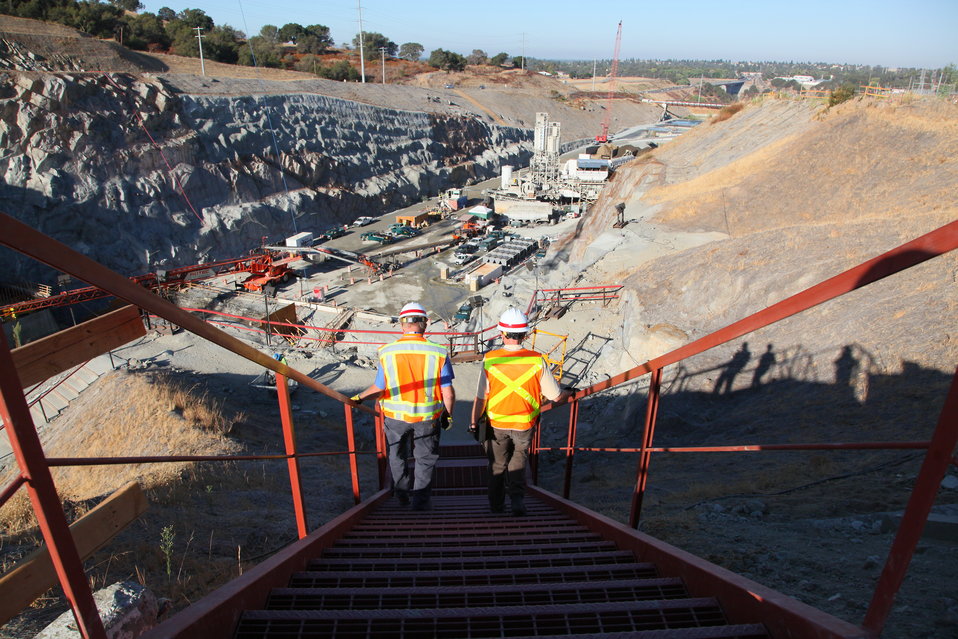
Safety a priority at Folsom Dam project

Wearing personal protective equipment, employees for the U.S. Army Corps of Engineers Sacramento District safely navigate the construction zone at the auxiliary spillway using walkways and scaffolding at the Folsom Dam in Folsom, Calif., Sept. 19, 2012. Safety at the job site is a number one priority; equipment and personal safety are a requirement. The Sacramento District is building the spillway in cooperation with the U.S. Bureau of Reclamation, the Central Valley Flood Protection Board, and the Sacramento Area Flood Control Agency to improve the safety of the existing dam and reduce flood risk for the greater Sacramento area.